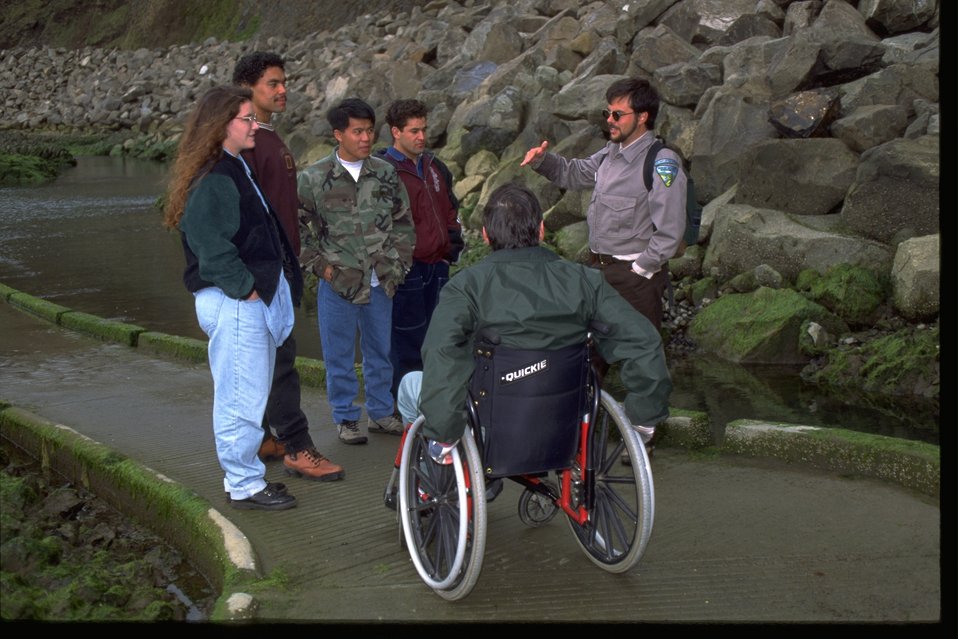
Programs at Yaquina Head Outstanding National Area accessible tidepools.